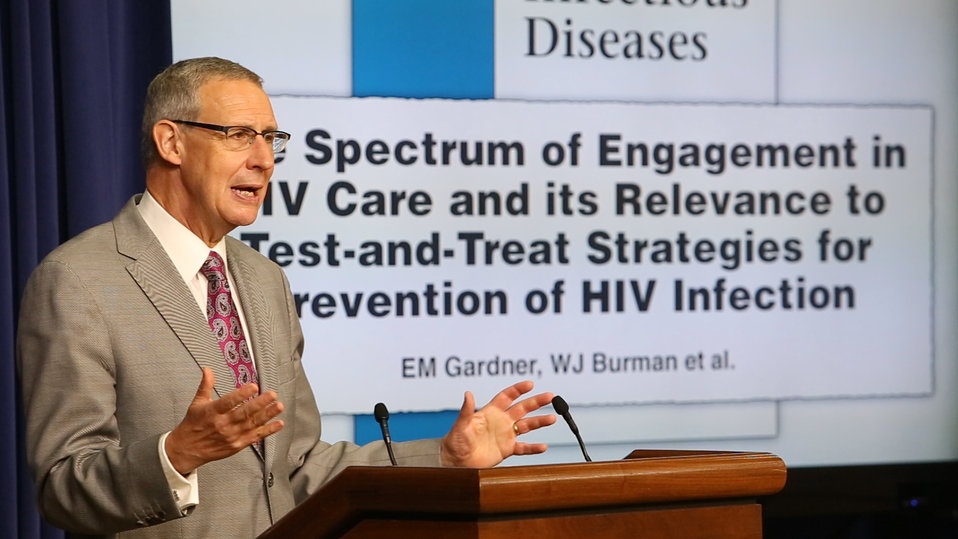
MVI 0180.MOV.Still006